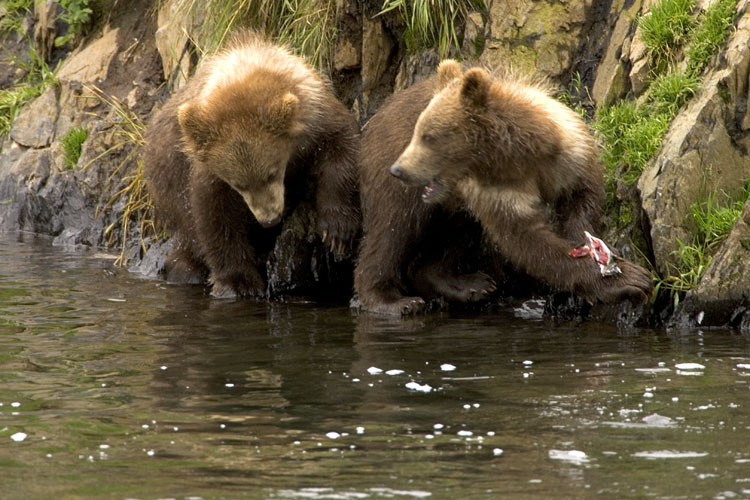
Wildlife of Kodiak Refuge